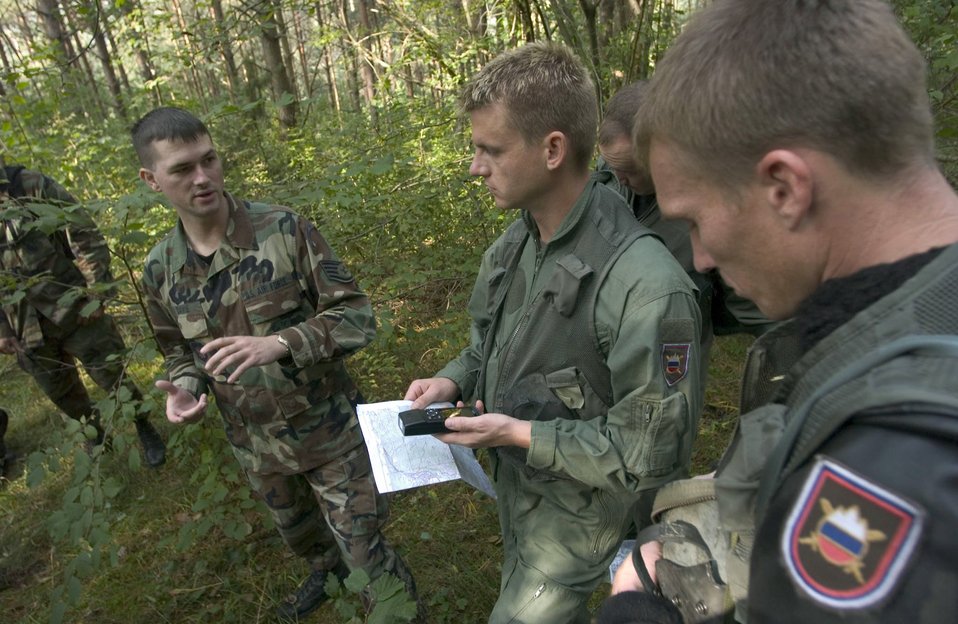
Airmen train with NATO allies during exercise

POCEK, Slovenia -- Staff Sgt. James Davis (left) shows Slovenian Lt. Roskar Zelko (center) and Slovenian Maj. Ales Stimec how to use a Global Positioning System receiver during combat search-and-rescue training here Oct. 5. Sergeant Davis is a survival escape, resistance and evasion instructor at Aviano Air Base, Italy. American and Slovenian Airmen exchanged information concerning escape and evasion procedures during Adriatic Rescue '04, a U.S.-Slovenian combat search-and-rescue exercise.